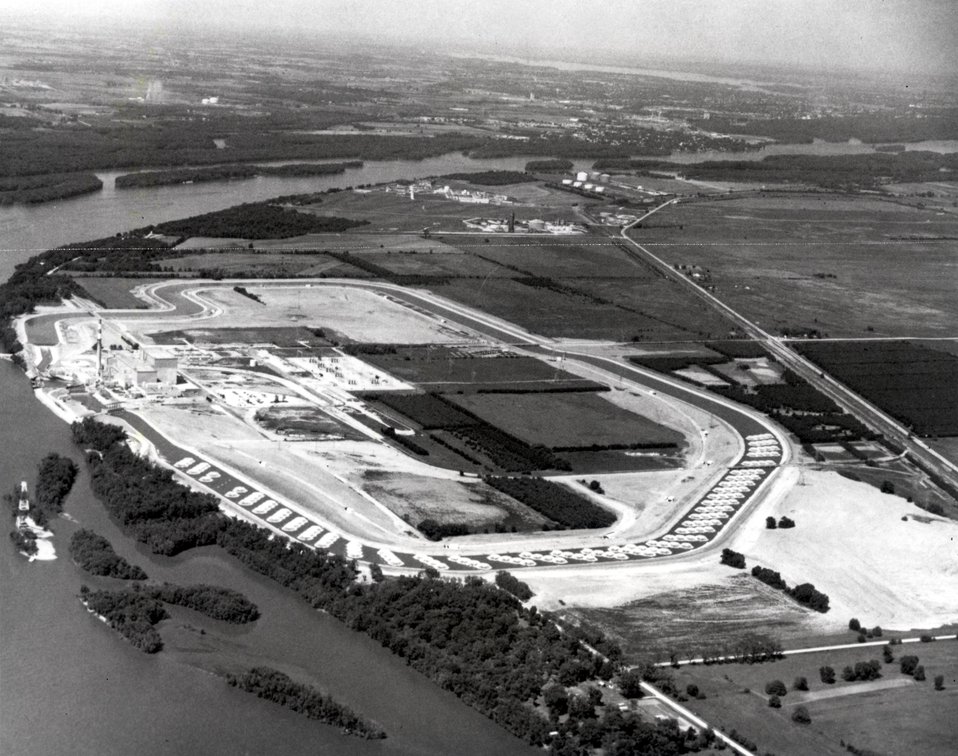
Quad-Cities section 1 and 2 located near Cordova, Illinois.